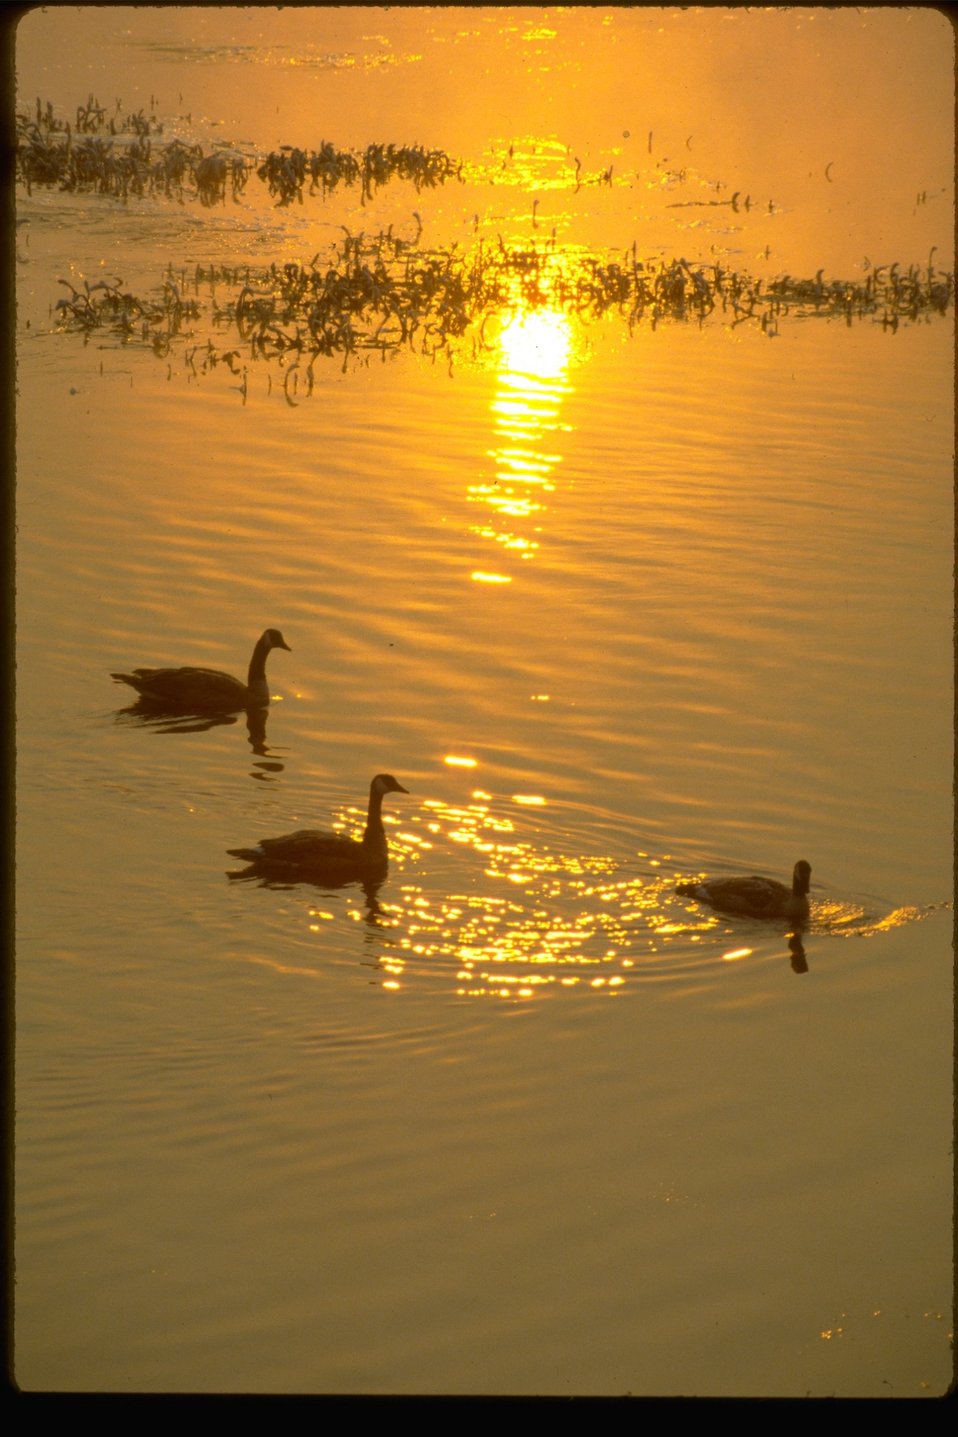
Sunset on water with 3 geese.